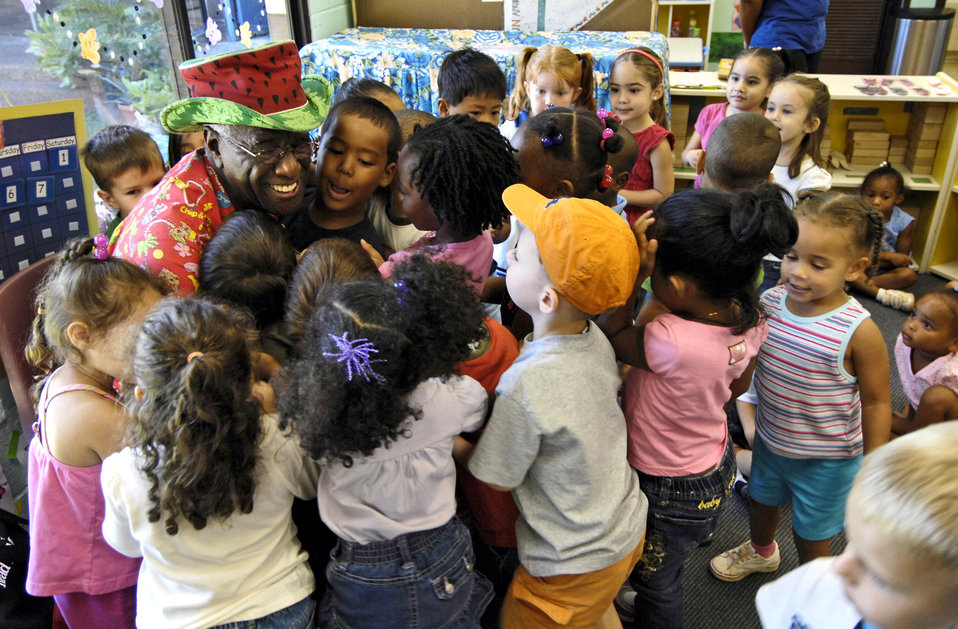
'Famous' former Airman recalls his service

Wally Amos receives hugs from children at the Child Development Center after reading to them Sept. 10 at Hickam Air Force Base, Hawaii. Mr. Amos is an actor, writer and original entrepreneur behind the Famous Amos cookie brand. He is an advocate of literacy and early childhood development, and served in the Air Force four years. He read to children as part of Air Force week Honolulu.